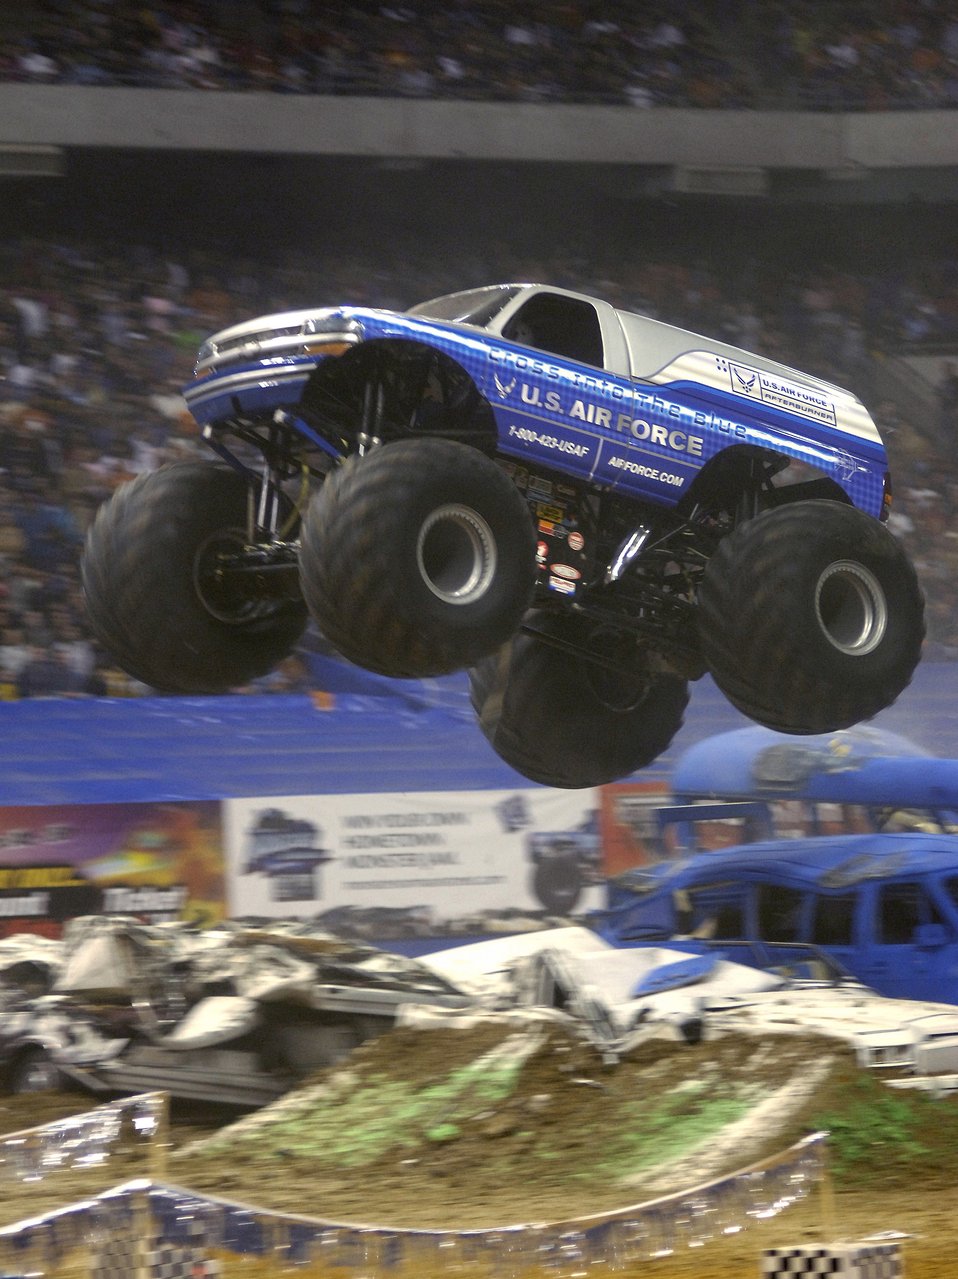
Monster recruiter

SAN ANTONIO -- Afterburner, the Air Force's new monster truck, flies over cars at the San Antonio Monster Jam, Jan. 14. Afterburner, driven by Paul Cohen, made the finals Jan. 14, but was edged out by Grave Digger in the final match.